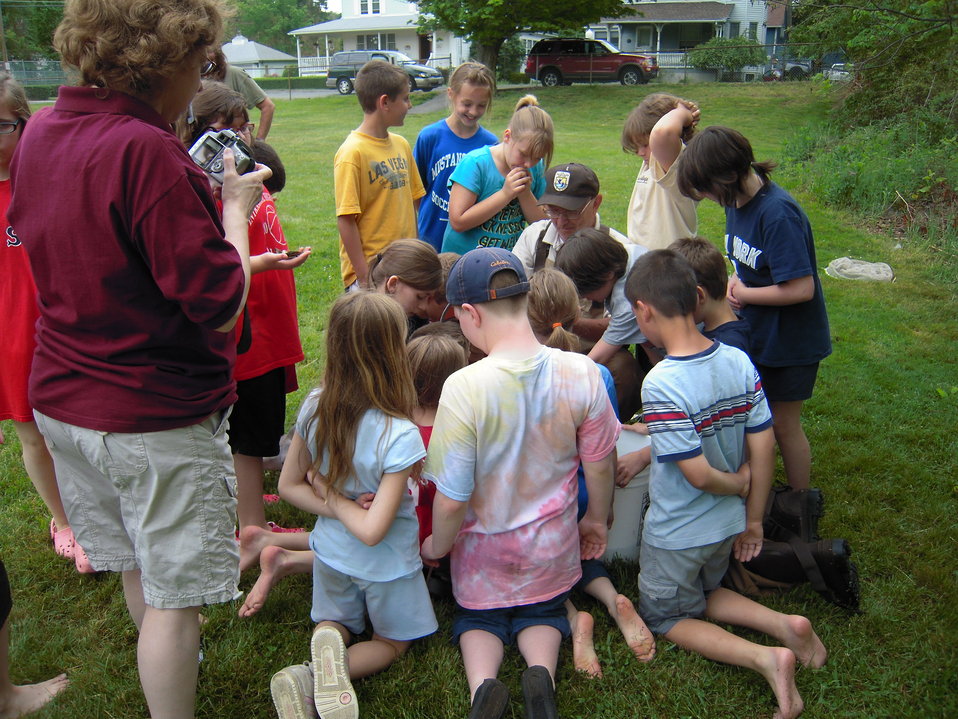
Gathered around the collection bucket